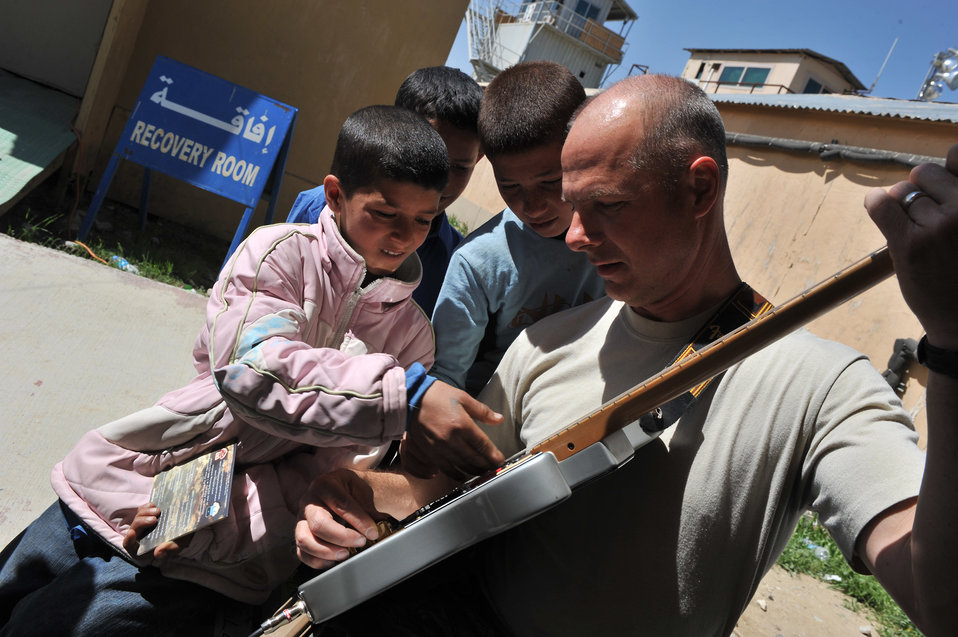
AFCENT band performs for Afghans

Tech. Sgt. Stephen Brannen, a U.S. Air Force Central Expeditionary Band guitarist and vocalist, allows Afghan children to play his guitar, April 20, 2011, at the Egyptian Field Hospital at Bagram Airfield, Afghanistan.